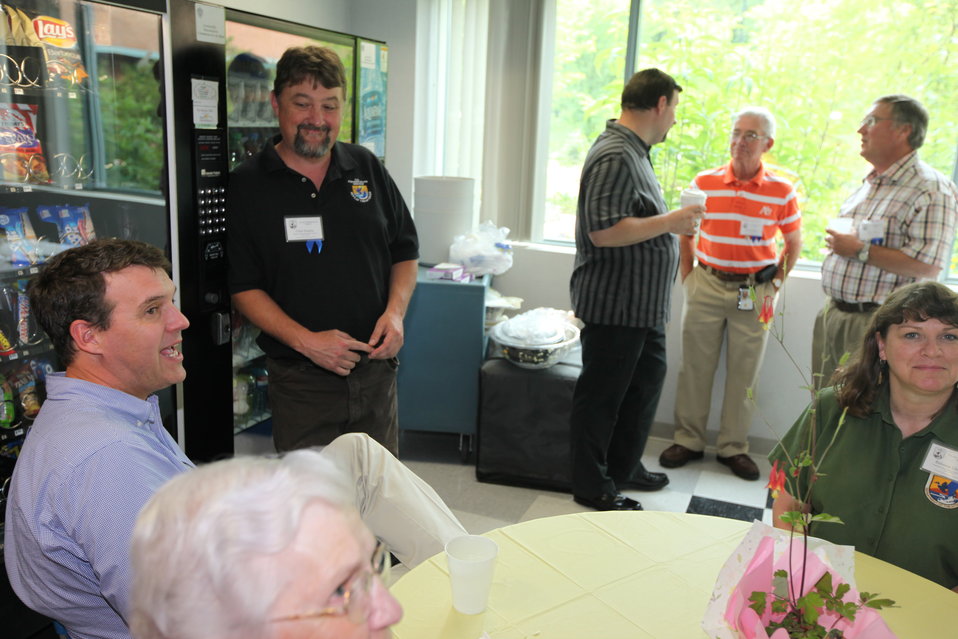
Northeast Region Employee Appreciation Awards

Luncheon